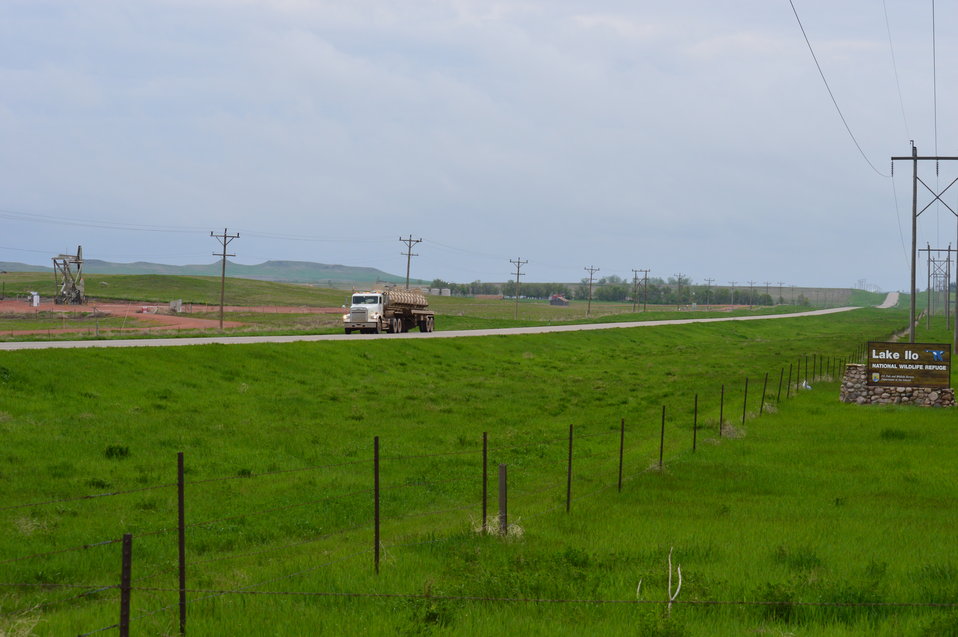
Road near Entrance

Oil development and the road near the entrance of Lake Ilo National Wildlife Refuge.